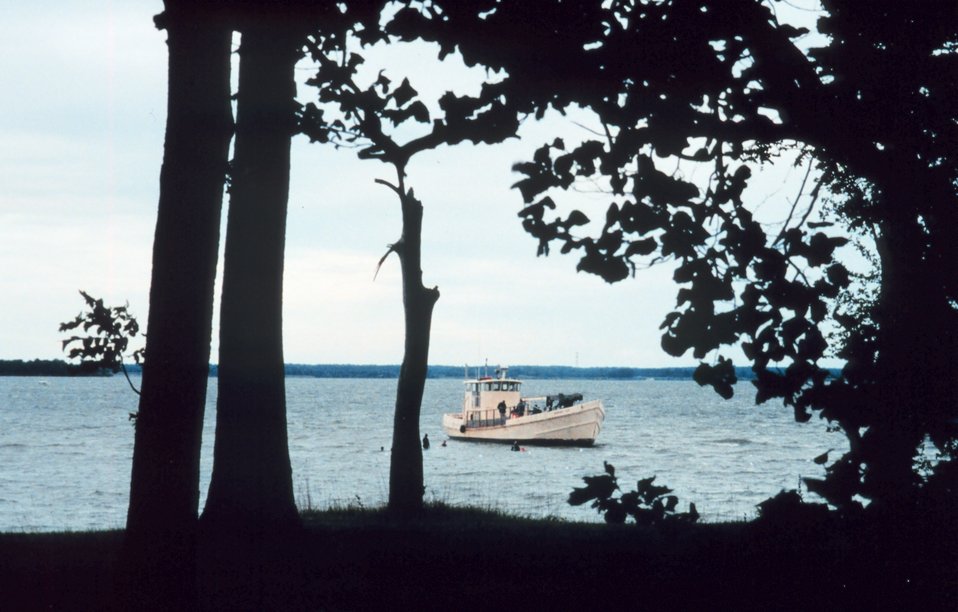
Volunteers assist the Oyster Recovery Partnership in their effort to transplant oyster spat before the population is decimated by the Stylochus flatworm. Workers from the Bay Bus Partnership Project are in the water preparing pallets of hatchery bags to be loaded aboard the ROBERT LEE.